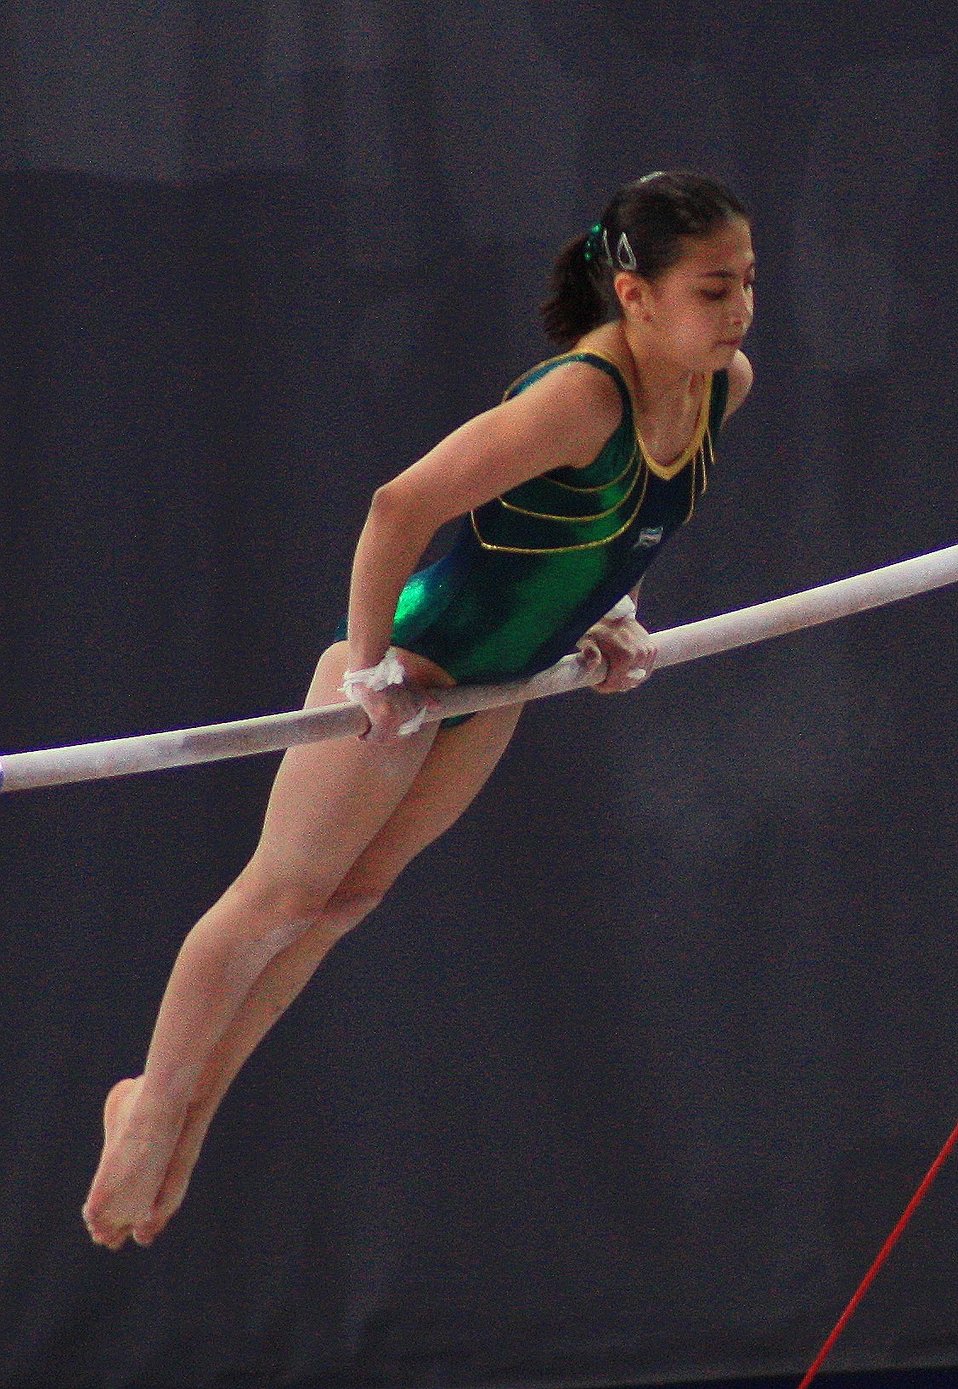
Fran√ßais†: Asal Saparbaeva lors des qualifications des barres asym√©triques aux 17e Internationaux de France, en 2010.